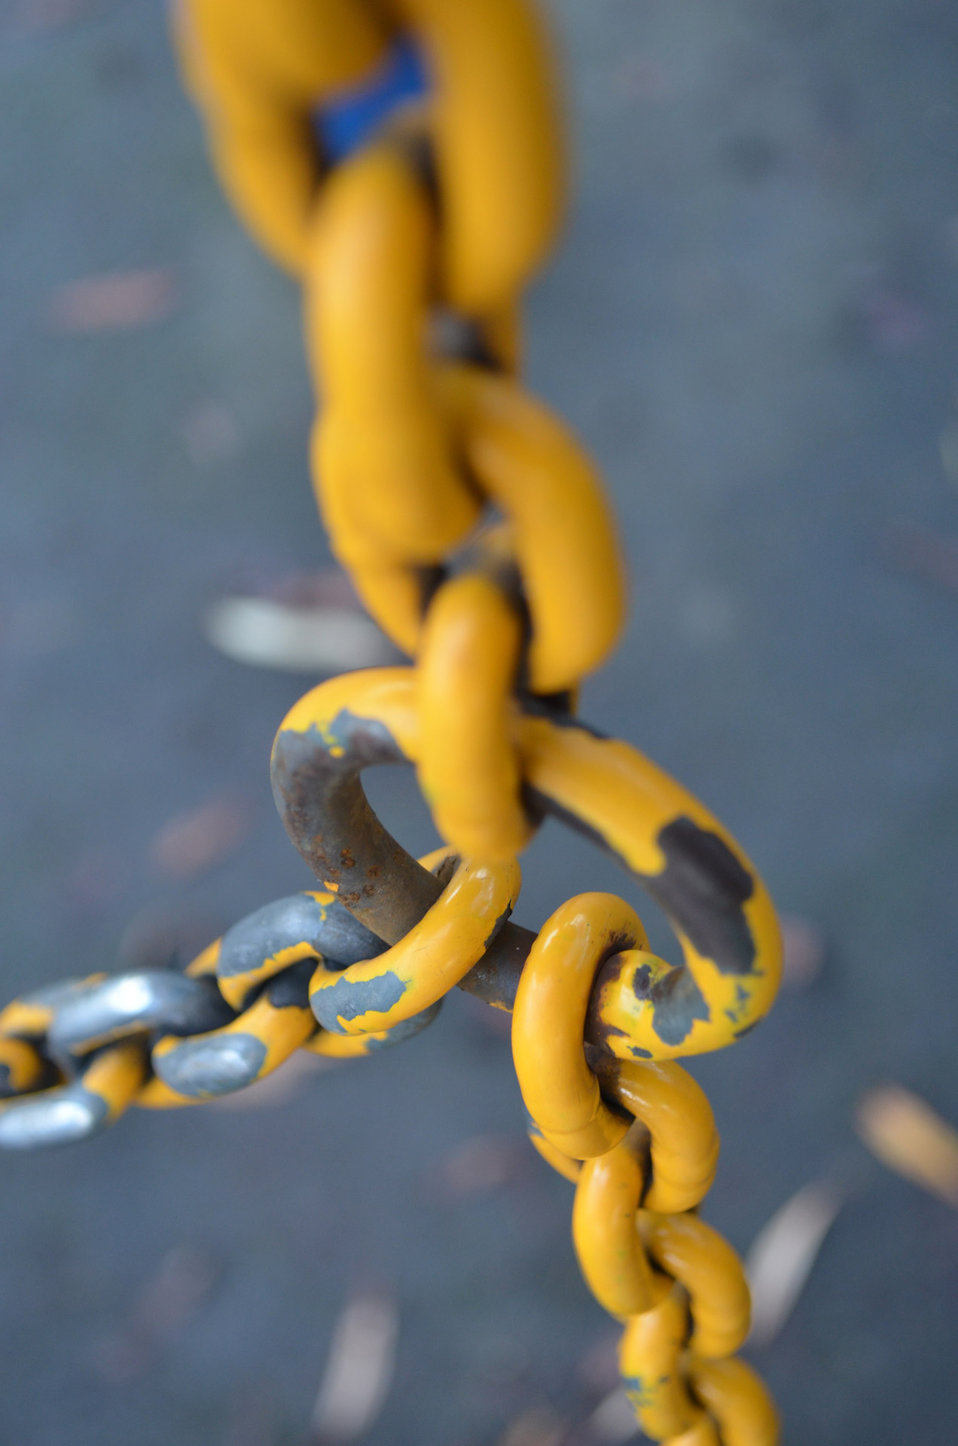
Yellow iron chain.